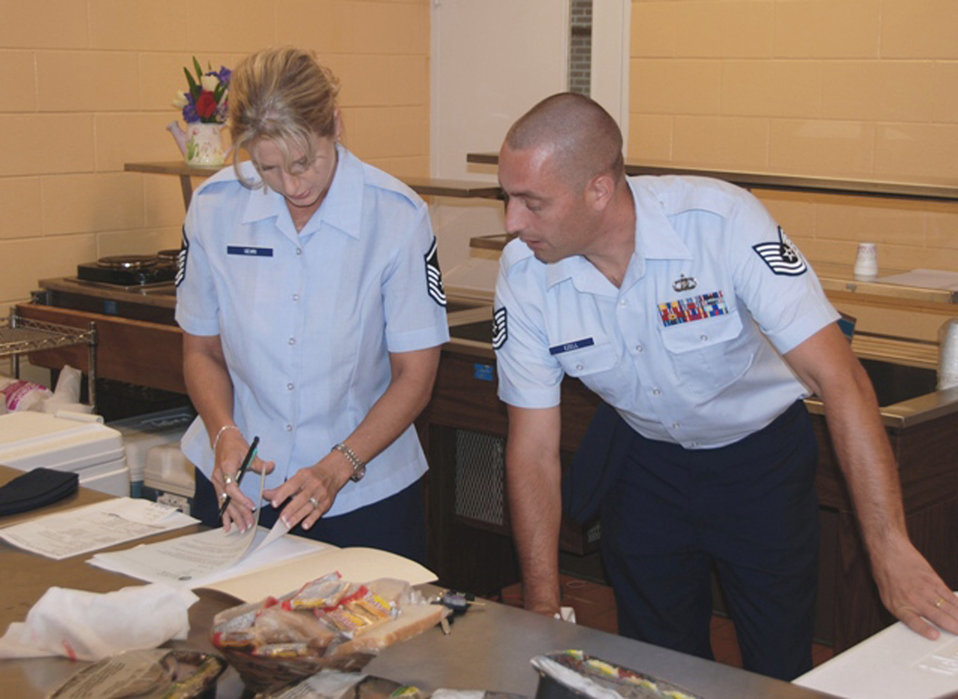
Tyndall Airmen participate in Meals on Wheels program

Master Sgt. Wendy Gehri and Tech. Sgt. Joe Ezell, members of the 601st Air and Space Operations Center at Tyndall Air Force Base, Fla., prepare their delivery route while volunteering with the local Bay County Council on Aging Meals on Wheels program.